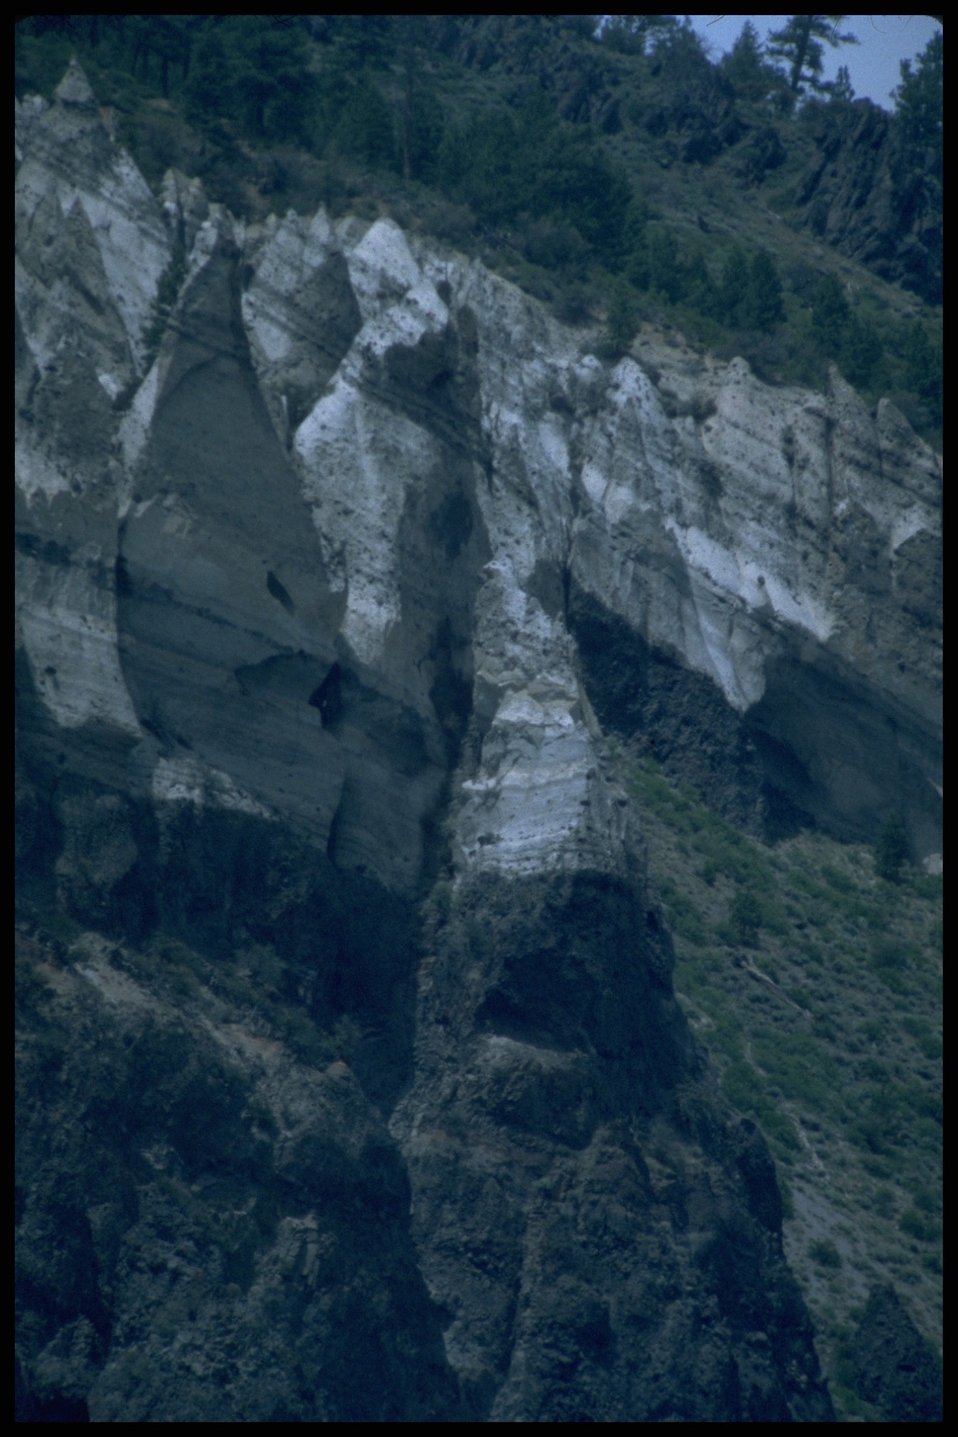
Summer Lake area rock formation. Lakeview District.